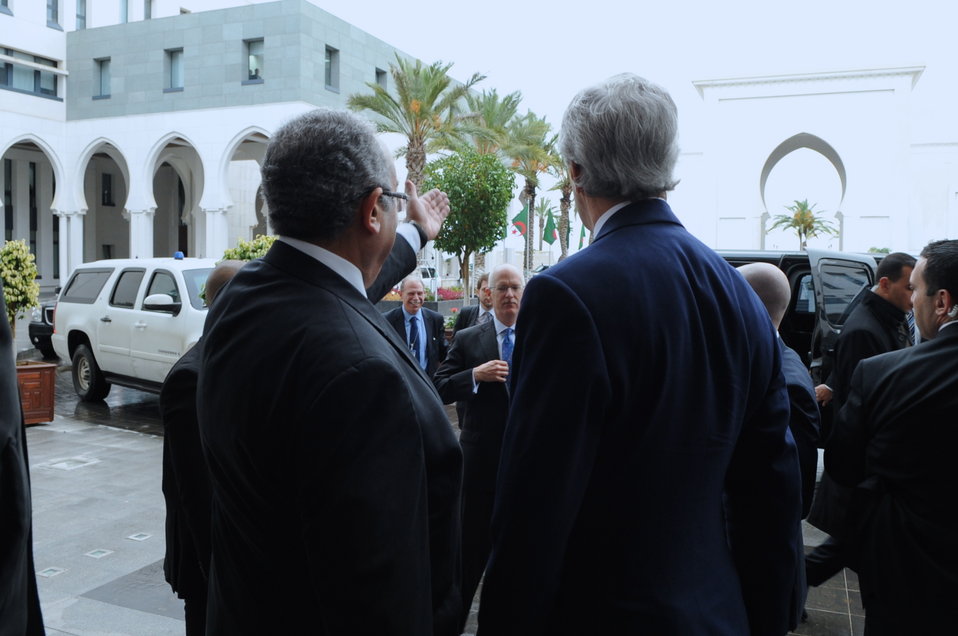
Algerian Foreign Minister Welcomes Secretary Kerry to Ministry of Foreign Affairs in Algiers

Algerian Foreign Minister Ramtane Lamamra shows U.S. Secretary of State John Kerry a row of alternating U.S. and Algerian flags before a Strategic Dialogue between their two countries at the Ministry of Foreign Affairs in Algiers, Algeria on April 3, 2014.